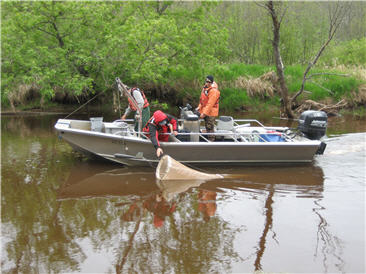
John boat expedition

EPA scientists net zooplankton for analysis in the Great Lakes coastal wetlands.

Learn more about the Great Lakes coastal wetlands